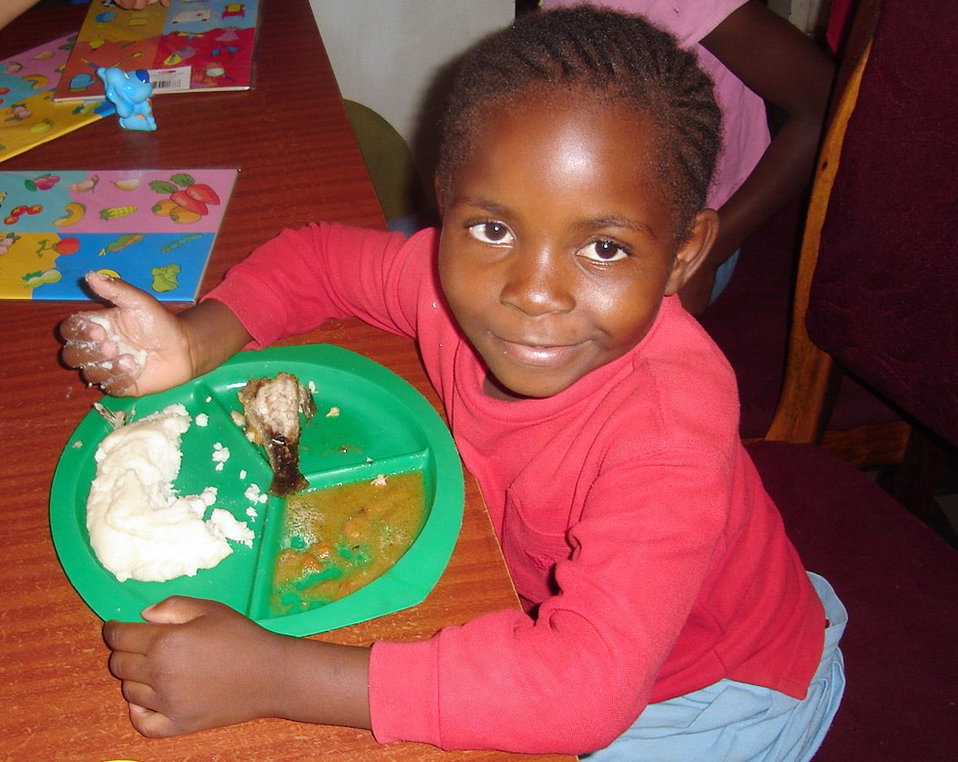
Humanitarian in action

ZAMBIA (AFPN) -- Six-year-old Doris eats a meal at the AIDS orphanage in Zambia. Doris' mother died of AIDS and her father regularly abused her before she came to stay at the facility. Kirk Milhoan)